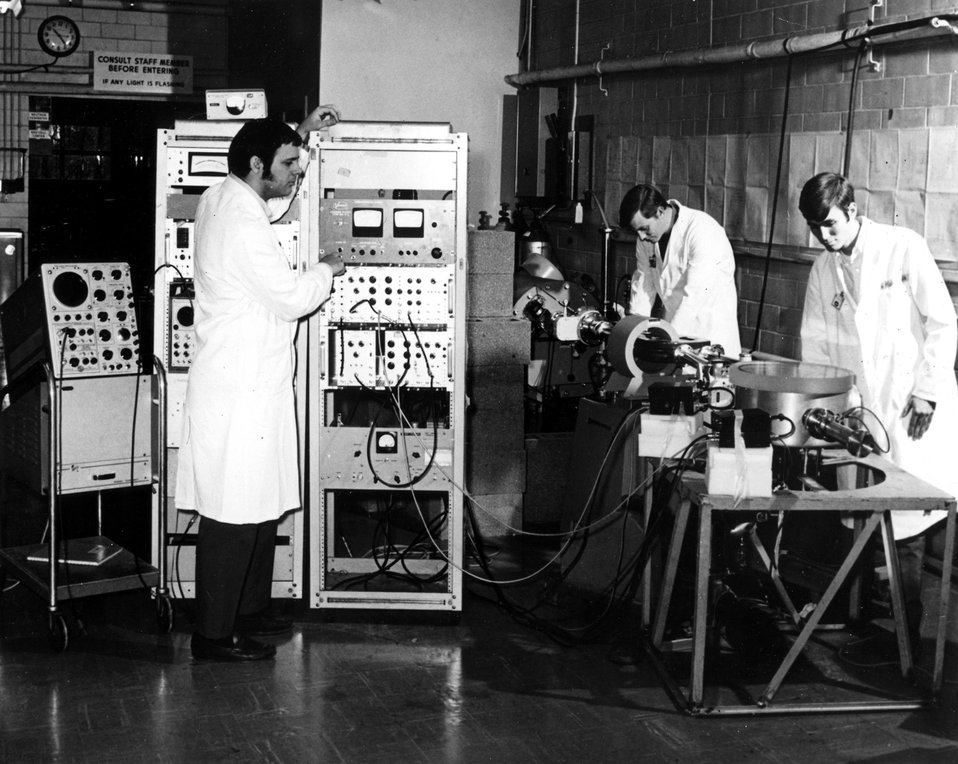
At the Special Training Division of Oak Ridge Associated Universities, student-faculty visits provide and opportunity for low-energy nuclear physics research with small particle accelerators. c. 1972